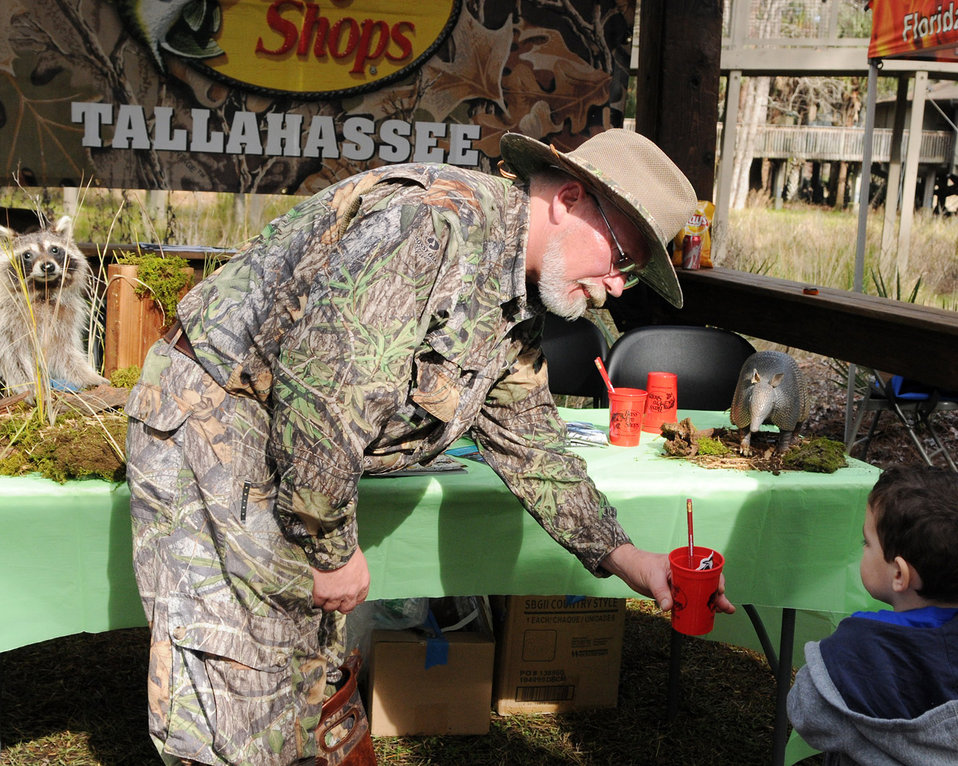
Bass Pro Exhibit

St. Marks NWR 2014 WHO Festival. February 1, 2014.
A variety of exhibitors provided opportunities for festival goers to learn about ways to enjoy outdoor recreation.